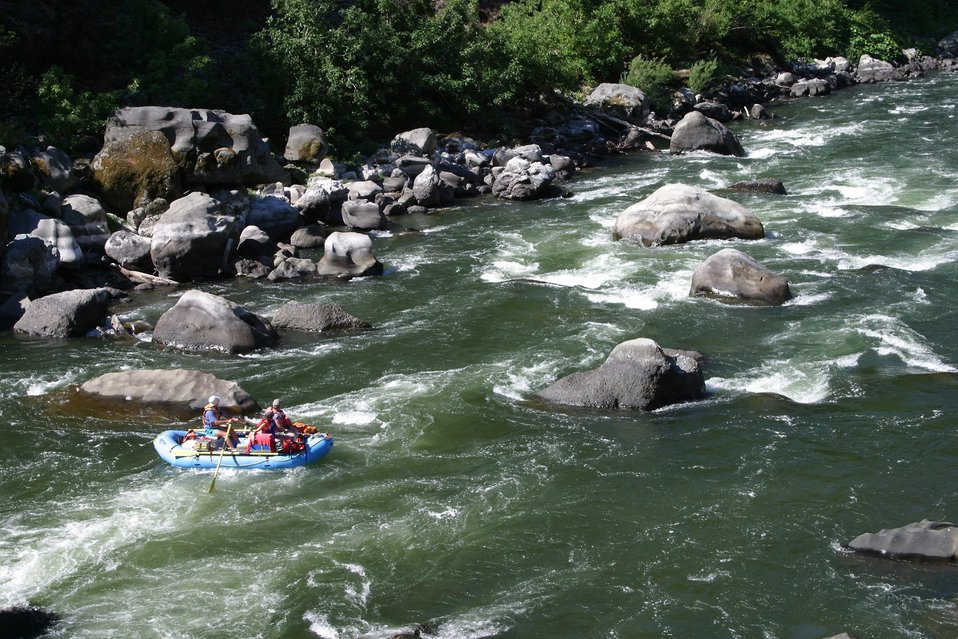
Blossom Rapids.